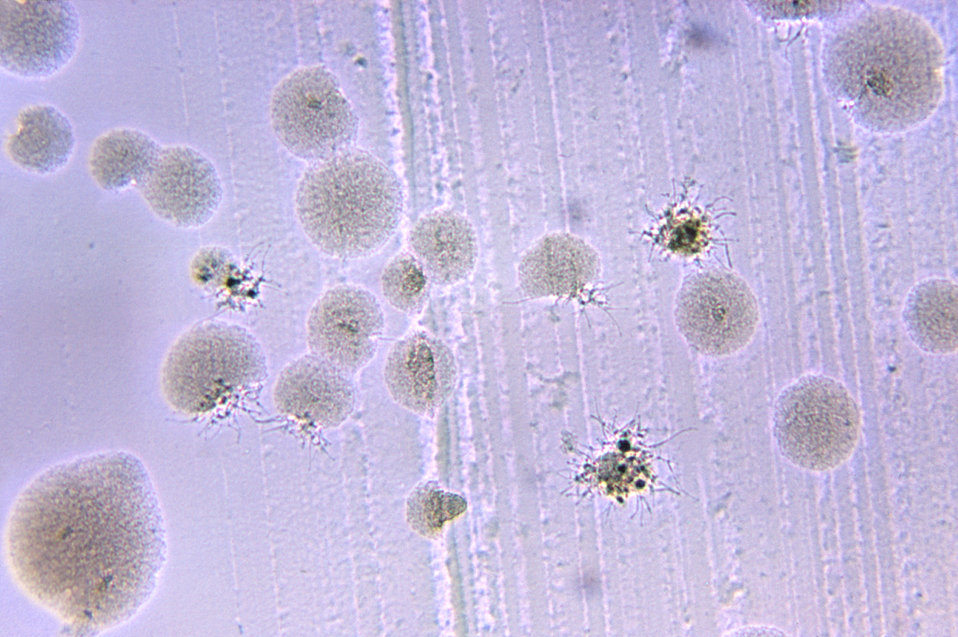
Cultivated for 48hrs on medium of brain heart infusion (BHI) agar, under a magnification of 125X, this photomicrograph revealed some of the ultrastructural morphology displayed by numerous Gram-positive Actinomyces sp. bacterial microcolonies.